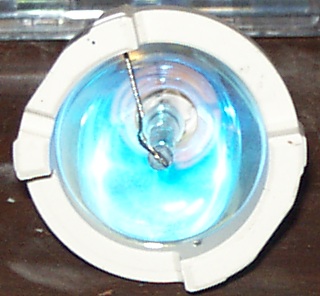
A 100W Osram Mercury-Xenon arc lamp in reflector. This lamp is used in UV adhesive curing systems. Deutsch: Eine 100W Osram Quecksilber-Xenonlampe. Sie wird zur unter anderem zur UV-Licht-Härtung verwendet.